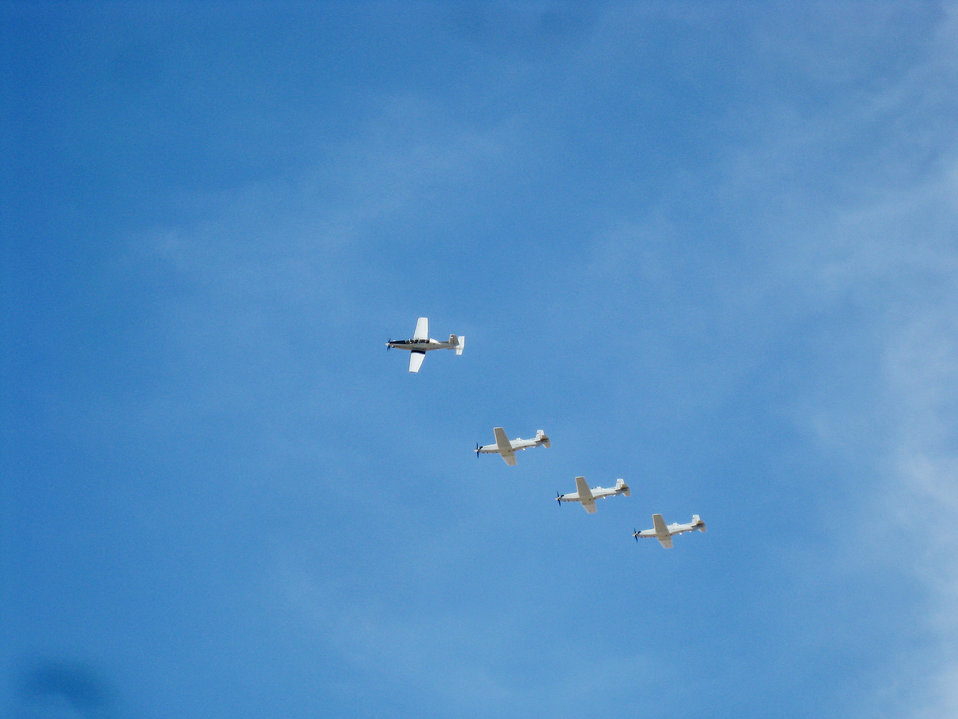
Airmen to train Iraqi air force students

T-6A trainer aircraft pilots fly above the Iraqi air force college Dec. 16, 2009, near Tikrit, Iraq.